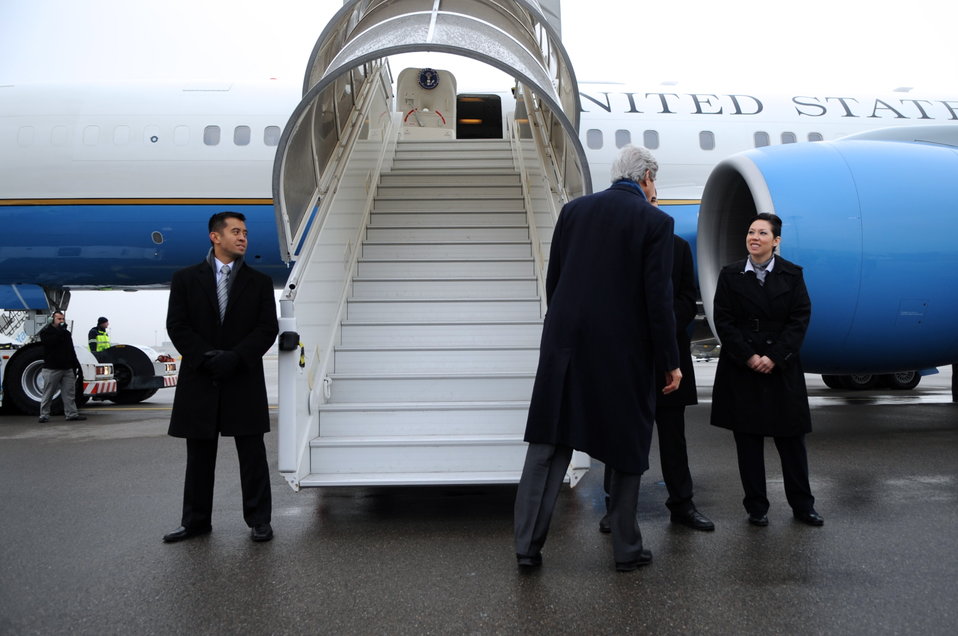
Secretary Kerry Greeting Air Force Crew

U.S. Secretary of State John Kerry speaks with part of his Air Force flight crew before boarding his flight in Zurich, Switzerland, on Jan. 25, 2014, after attending the Geneva II conference in Montreux and the World Economic Forum in Davos.[State Dept. Photo/Public Domain]